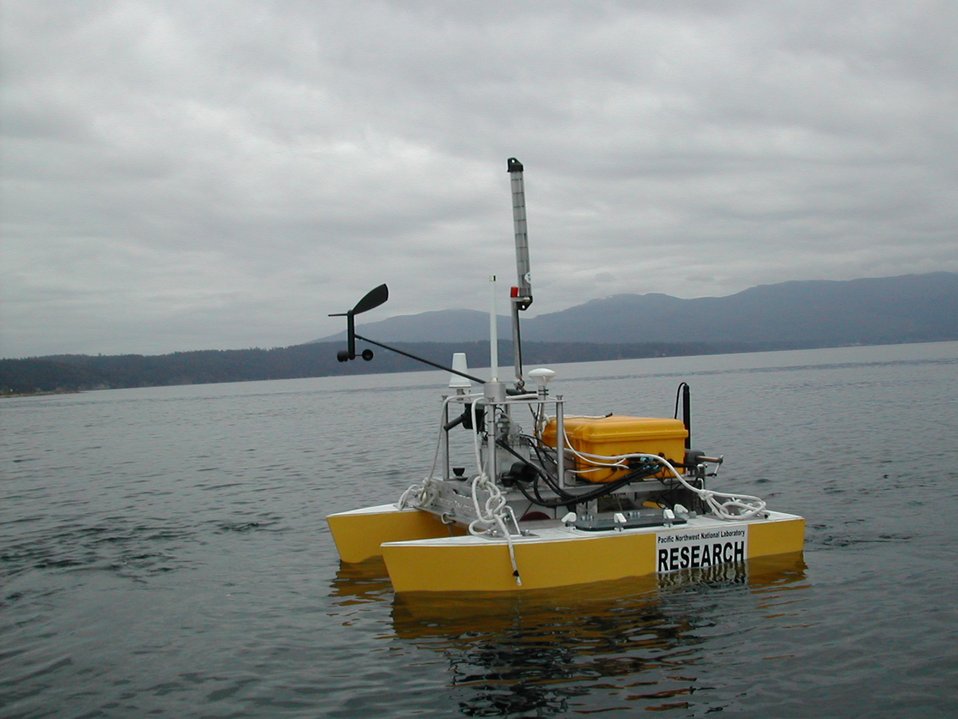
THE ACQUATIC MULTISENSOR MEASUREMENT PLATFORM FITTED WITH EARLY WARNING SENSOR SYSTEMS.

THE PACIFIC NORTHWEST NATIONAL LABORATORY AT THE MARINE SCIENCES LABORATORY IS DEVELOPING EARLY WARNING SYSTEMS THAT CAN COLLECT SAMPLES FROM THE TOP MICROLAYER OF WATER WHERE CONTAMINANTS CAN CONCENTRATE, ENABLING MORE SENSITIVE, ACCURATE AND EARLY IDENTIFICATION OF CONTAMINANTS OF CONCERN.